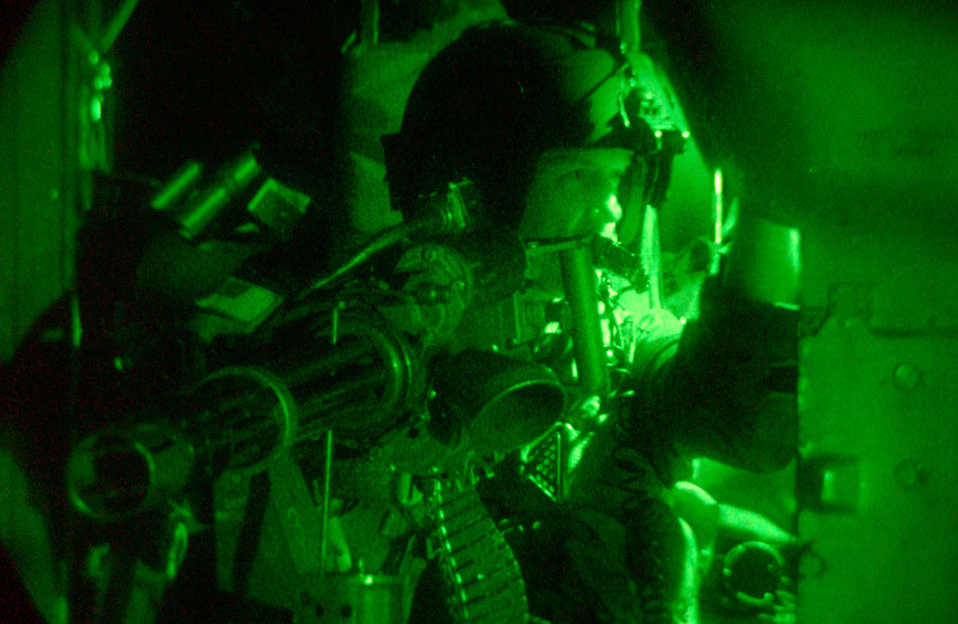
Night flyer

LUNGI, Sierra Leone -- Tech. Sgt. Joe Kirsch, a gunner with the 56th Rescue Squadron, Naval Air Station Keflavik, Iceland, mans a GAU-II mini gun in preparation for a mission into the U.S. Embassy. The 398th Air Expeditionary Group is currently in Sierra Leone to provide personnel recovery and emergency evacuation capability for the humanitarian assistance survey team and the fleet antiterrorism security team in Liberia.